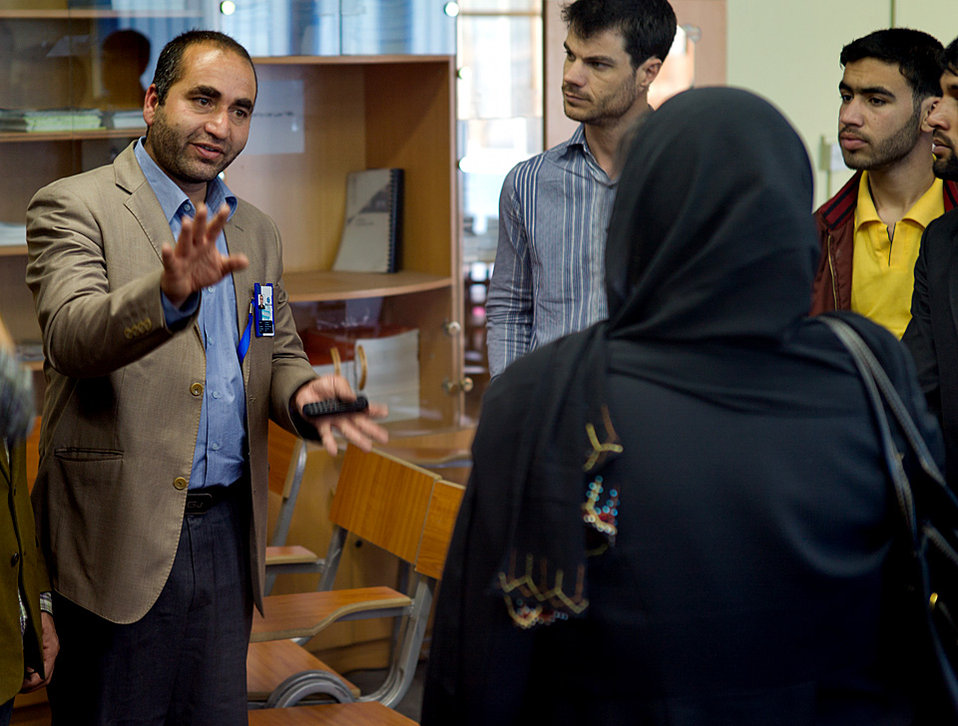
The Director peaking to Asta